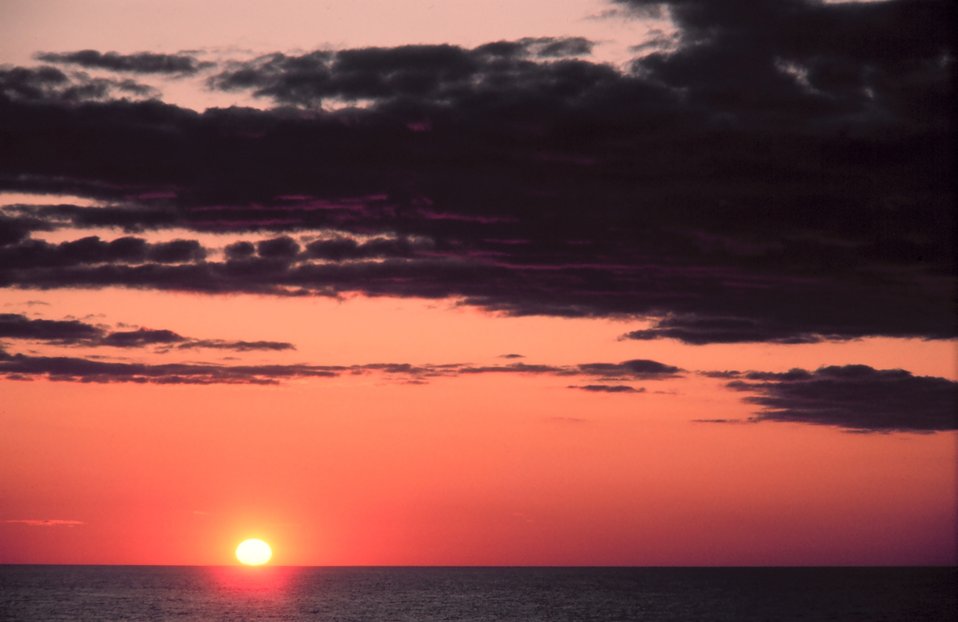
The disk of the sun appears to be resting on the ocean. A perfect time to check compass error by observing a sun azimuth.